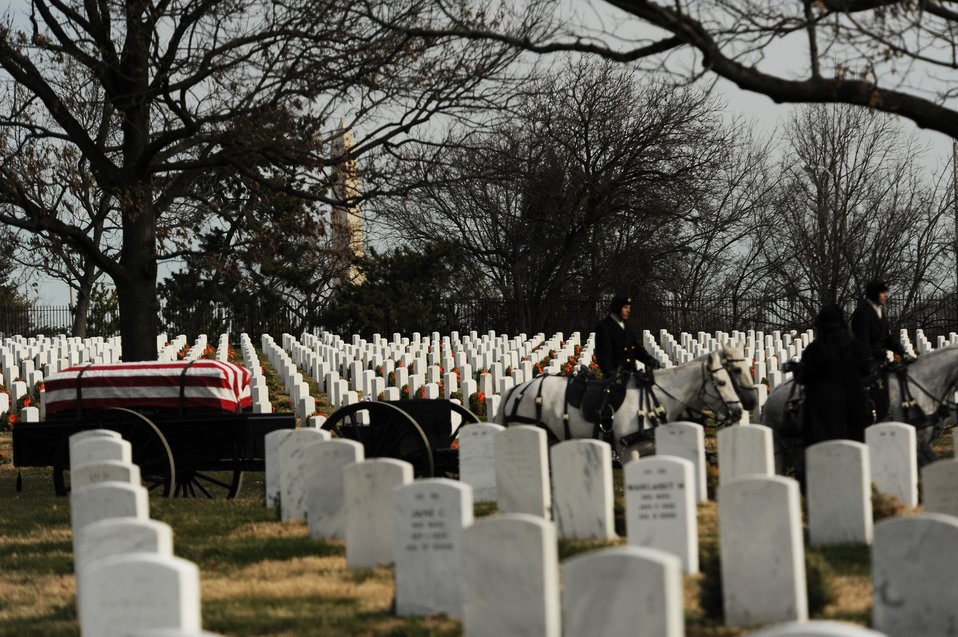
Retired Lt. Col. Luke Weathers Jr. funeral

Members of the 3rd U.S. Army Infantry Regiment (The Old Guard) escort the caisson carrying retired Lt. Col. Luke Weathers Jr. during his burial ceremony Jan. 20, 2012, at Arlington National Cemetery, in Virginia. Weathers, an original Tuskegee Airman, was awarded the Distinguished Flying Cross for his heroic actions during World War II.